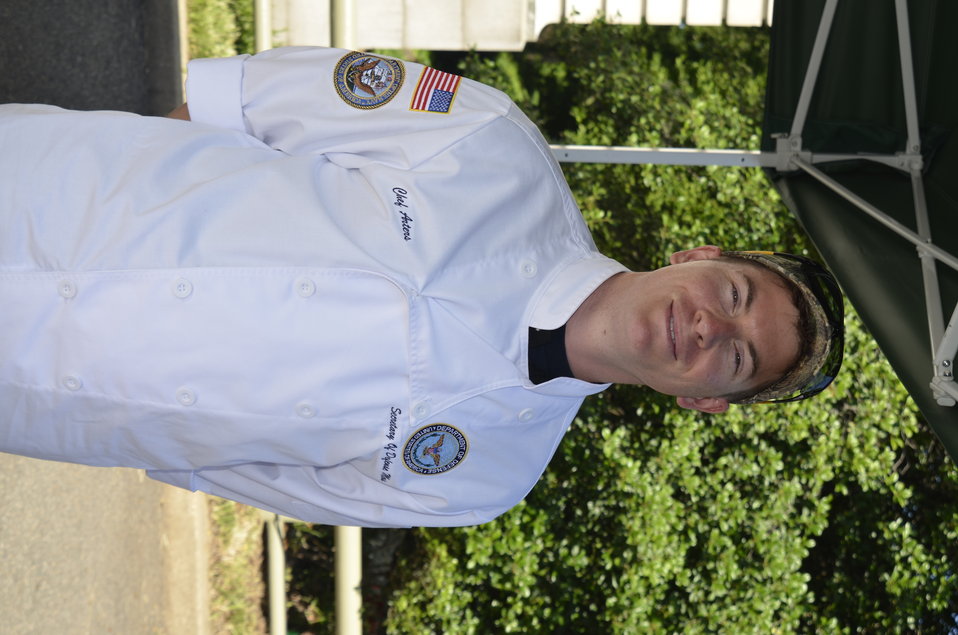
U.S. Navy Culinary Specialist First Class (CS1) George Arters prepares a meal at the Military Chefs barbeque battle held at the opening of the U.S. Department of Agriculture’s (USDA) Famers Market in the east parking lot at USDA on Friday, Jun. 6, 2014.